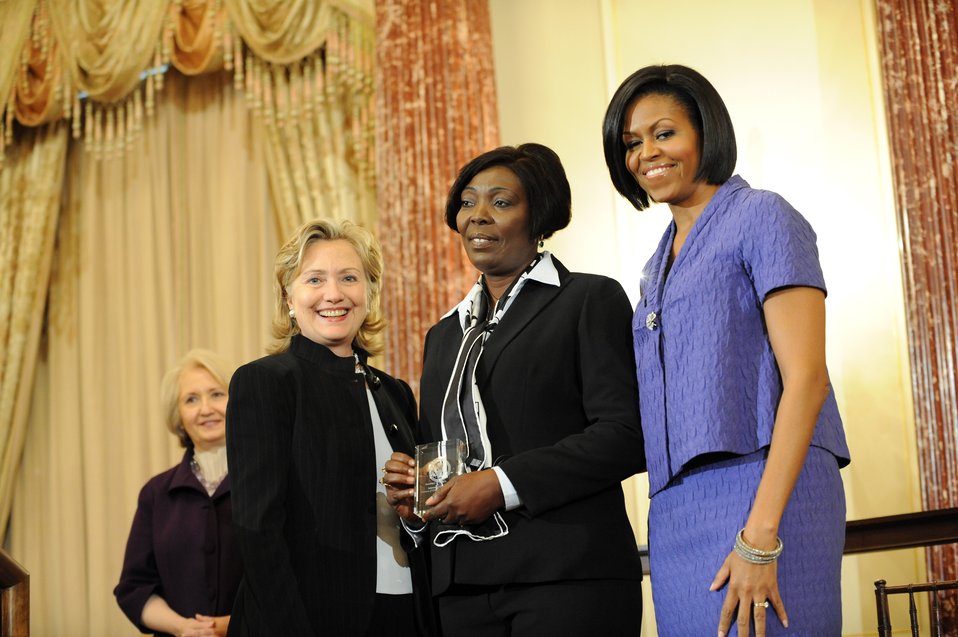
Secretary Clinton With First Lady Michelle Obama and Honoree Sonia Pierre of the Dominican Republic

U.S. Secretary of State Hillary Clinton and First Lady Michelle Obama stand with Honoree Sonia Pierre of the Dominican Republic at the 2010 International Women of Courage Awards at the U.S. Department of State, Washington, D.C. March 10, 2010.